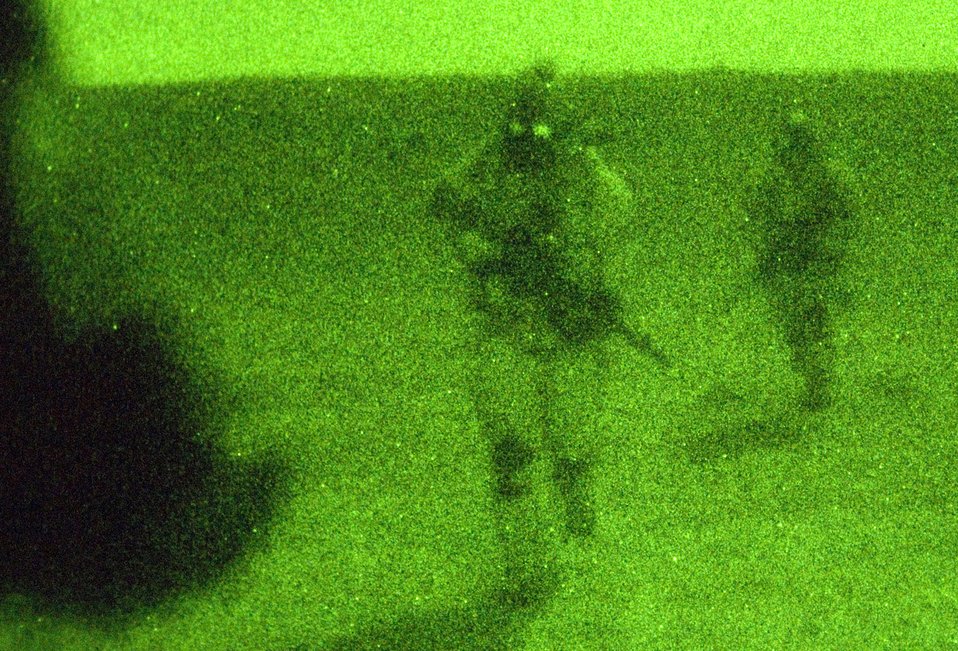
Pararescue Airmen mission ready for search, rescue

Two pararescue jumpers return from engaging in a combat search and rescue rehearsal mission Feb. 24 outside Balad Air Base, Iraq. They will practice hoisting, repelling and evasive maneuvering techniques to stay proficient. They are assigned to the 64th Expeditionary Rescue Squadron.